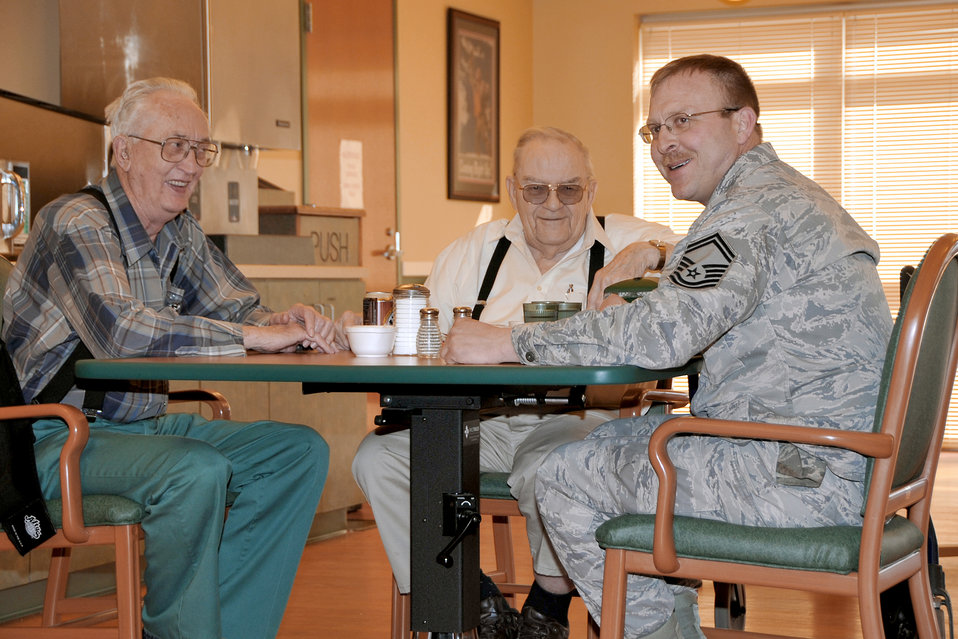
Veterans Home Nebraska

Senior Master Sgt. Tadd Goehring enjoys a chat with residents of the Eastern Nebraska Veterans Home Feb. 16, 2011, near Offutt Air Force Base, Neb. Sergeant Goehring is assigned to the 55th Aircraft Maintenance Squadron.